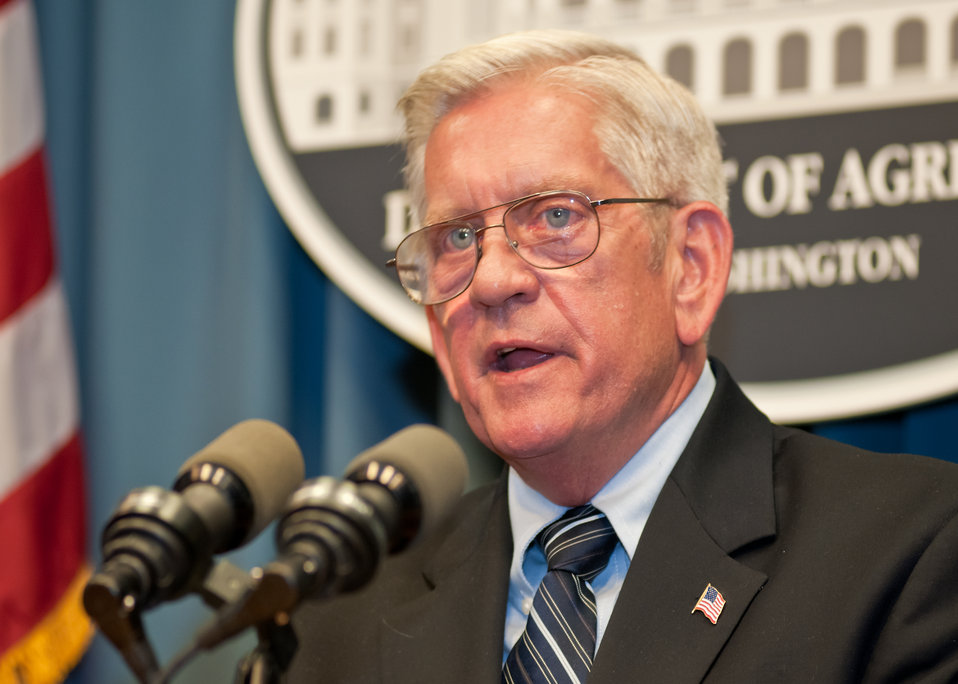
Agriculture Administrative Operations Audio Visual Production Manager Kerry Gorton advised students and graduates on the finer points of public speaking at the United States Department of Agriculture (USDA) Hispanic Association of Colleges and University (HACU) and Tribal College summer interns during their orientation at USDA in Washington, DC, Monday, Jun 6, 2011. The HACU/Tribal College National Internship Program represents more than 400 colleges and universities committed to higher education in the U.S., Puerto Rico, Latin America, Spain and Portugal and places student interns each year with federal agencies in Washington, DC or in field offices around the country.